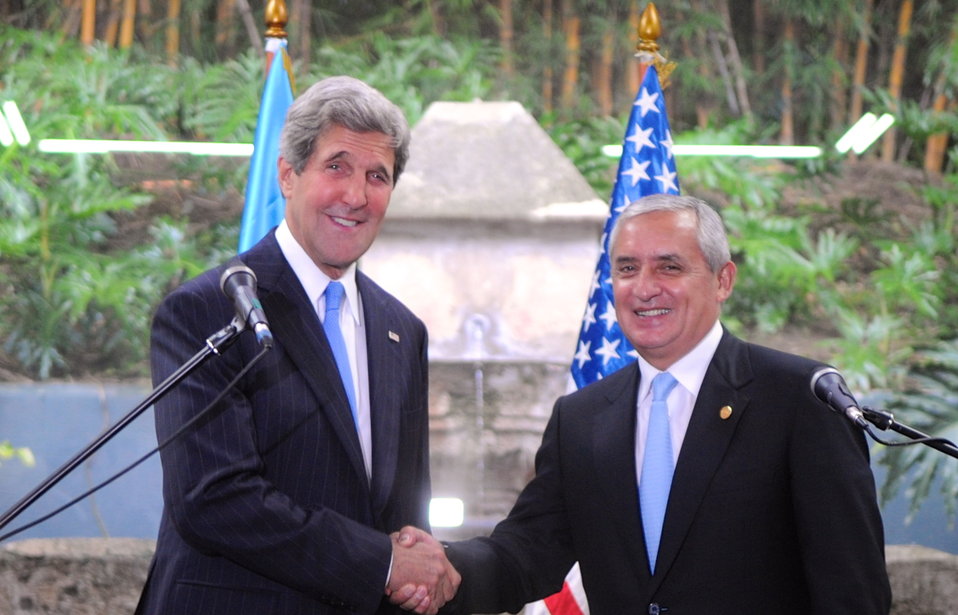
Secretary Kerry Delivers Remarks With Guatemalan President Perez Molina

U.S Secretary of State John Kerry delivers remarks with Guatemalan President Otto Perez Molina in Antigua, Guatemala, on June 4, 2013.